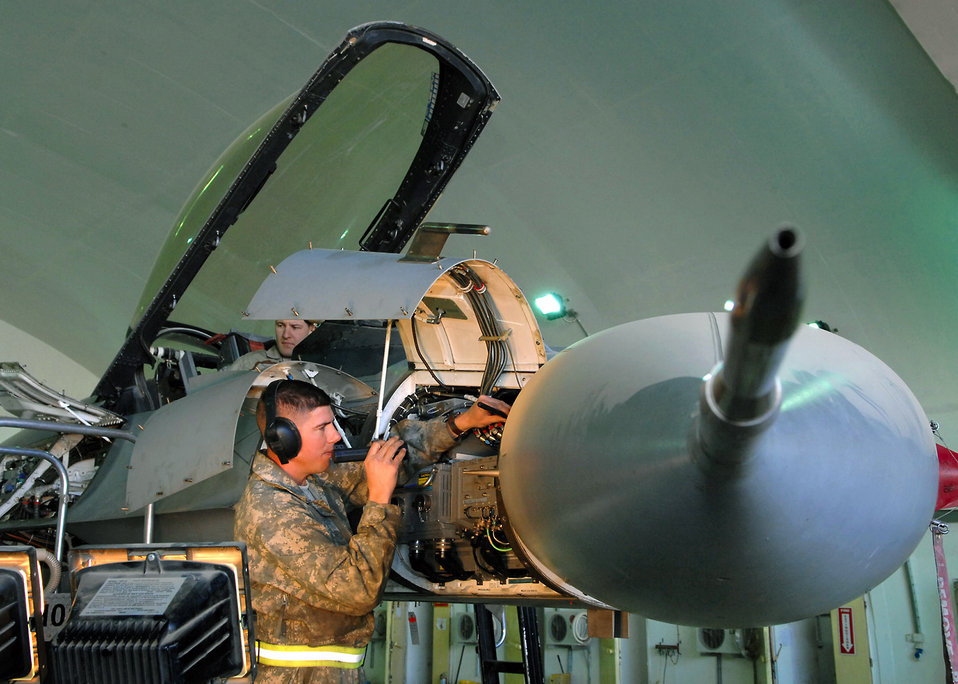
Tune-up time

Master Sgt. Chris Taylor examines the forward avionics bay of an F-16 Fighting Falcon during a 300-hour phase inspection Feb. 22 at Balad Air Base, Iraq. The phase inspection includes preventative maintenance on all systems and equipment on the aircraft. Sergeant Taylor is a 332nd Expeditionary Maintenance Squadron crew chief deployed from Hickam Air Force Base, Hawaii.